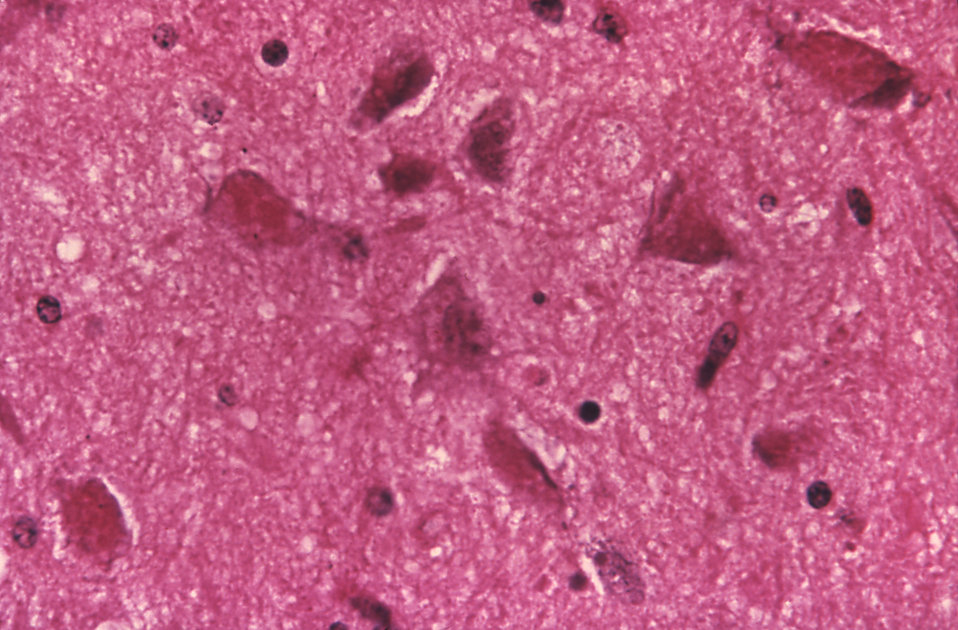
This photomicrograph demonstrates cellular changes associated with rabies encephalitis using an H&E staining technique.